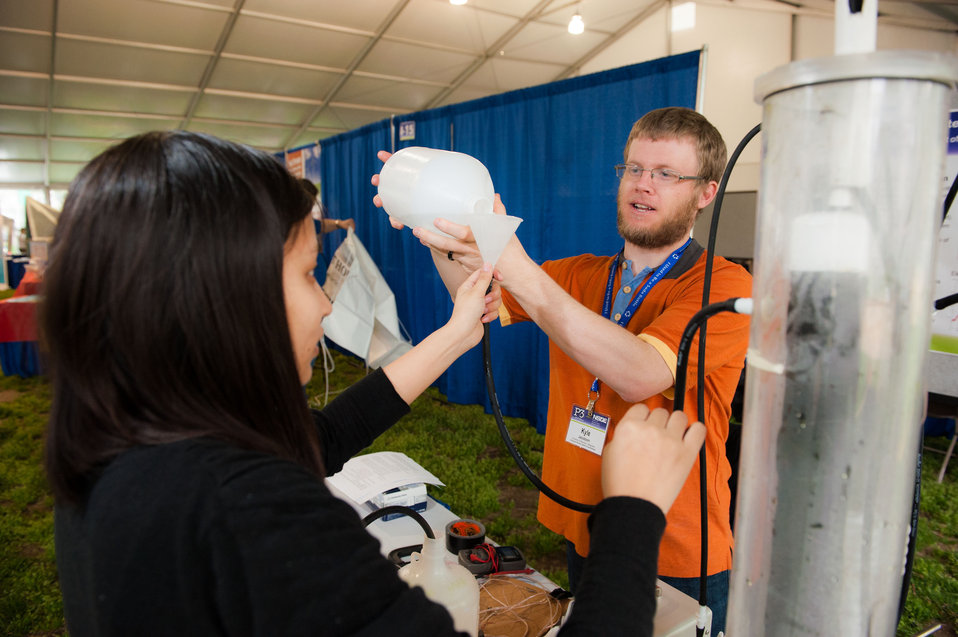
April 18, 2013 - P3 Design Expo

Browse the full list of the projects that just might change our world @ www.epa.gov/ncer/p3/project websites/2013/index.html

People Prosperity and the Planet: National Sustainable Design Expo on the National Mall 18-19 April 2013